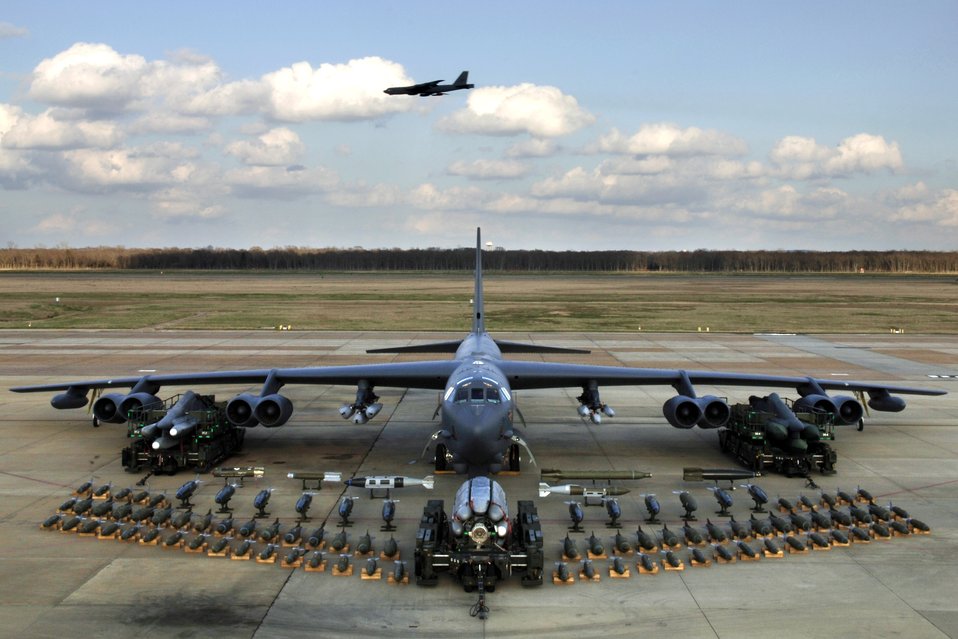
Display of might

BARKSDALE AIR FORCE BASE, La. (AFPN) -- Munitions on display show the full capabilities of the B-52 Stratofortress.